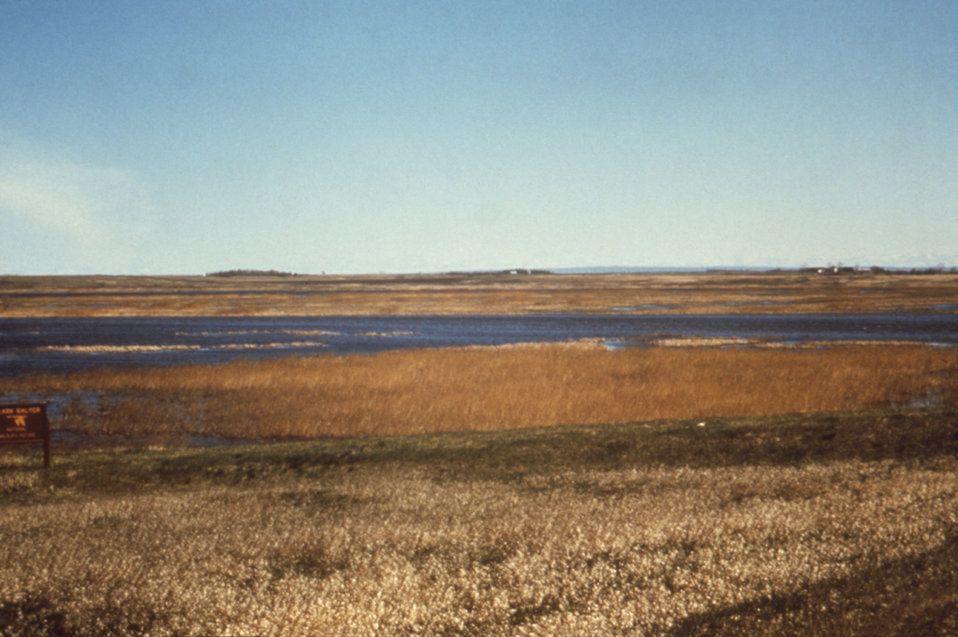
This 1976 photograph depicts the J. Clark Salyer National Wildlife Refuge off the Souris River in North Dakota.